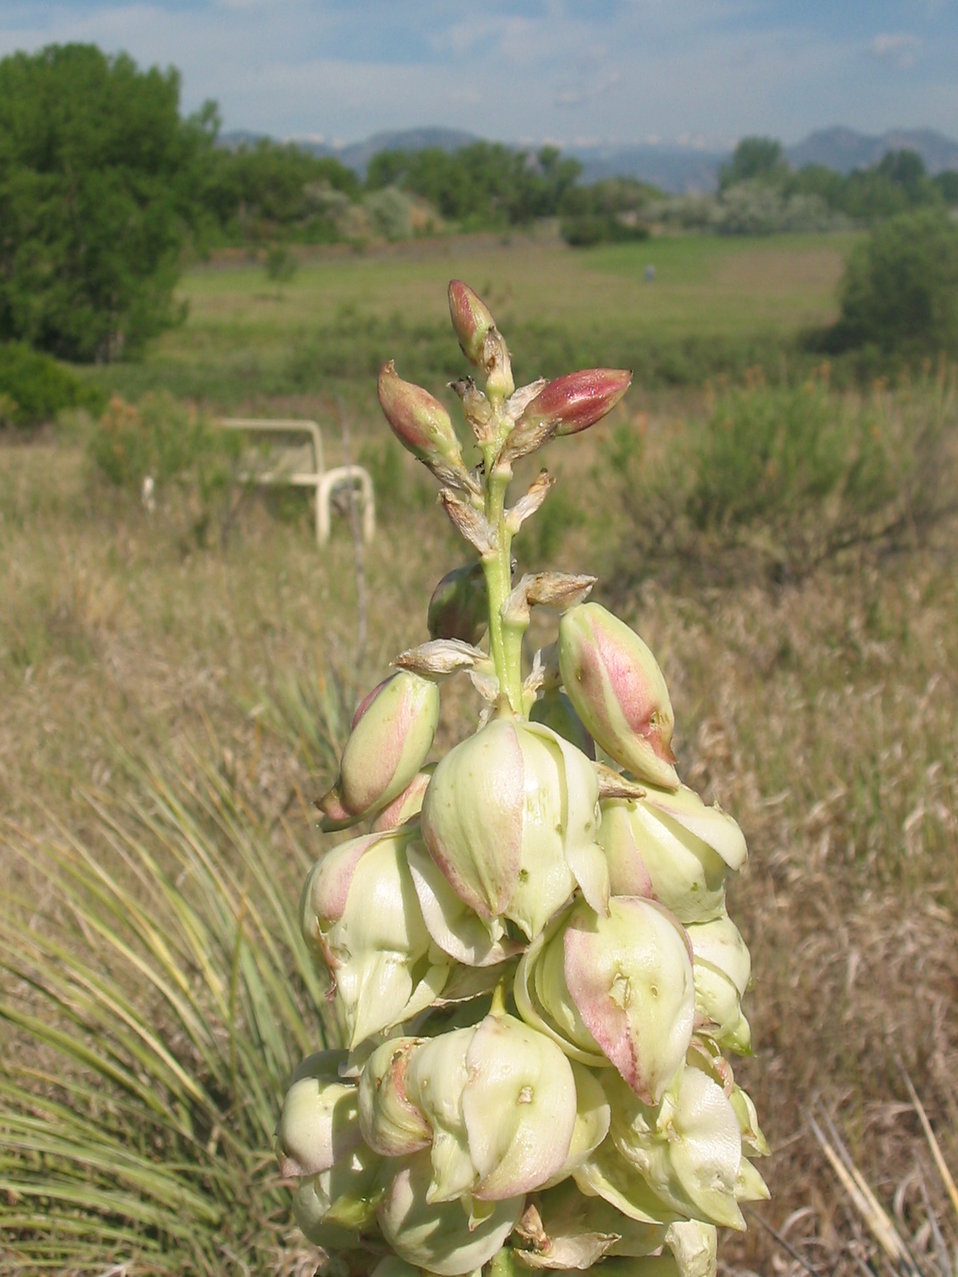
Prairie Plant